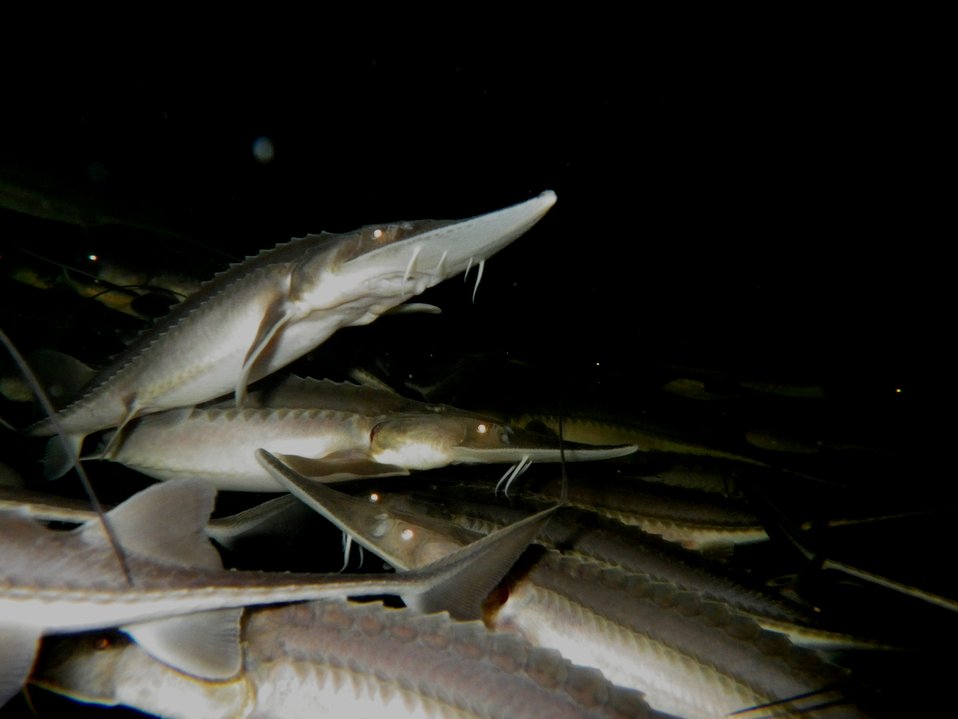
Pallid Sturgeon Yearlings